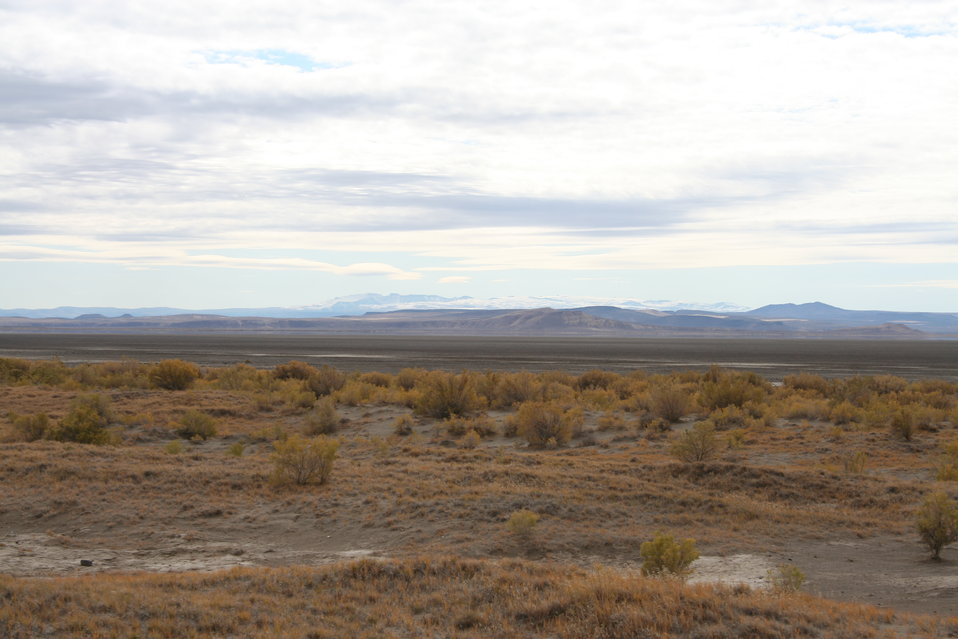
Refuges in the movies, Malheur Refuge

A view from the north side of Harney Lake on Malheur National Wildlife Refuge in Oregon shows the stark alkali saltgrass landscape seen by Stephen Meek’s 1845 wagon train. The pioneers’ hardships inspired the 2011 film “Meek’s Cutoff,” which includes scenes of the high desert refuge. The refuge protects habitat for migratory birds and wildlife.